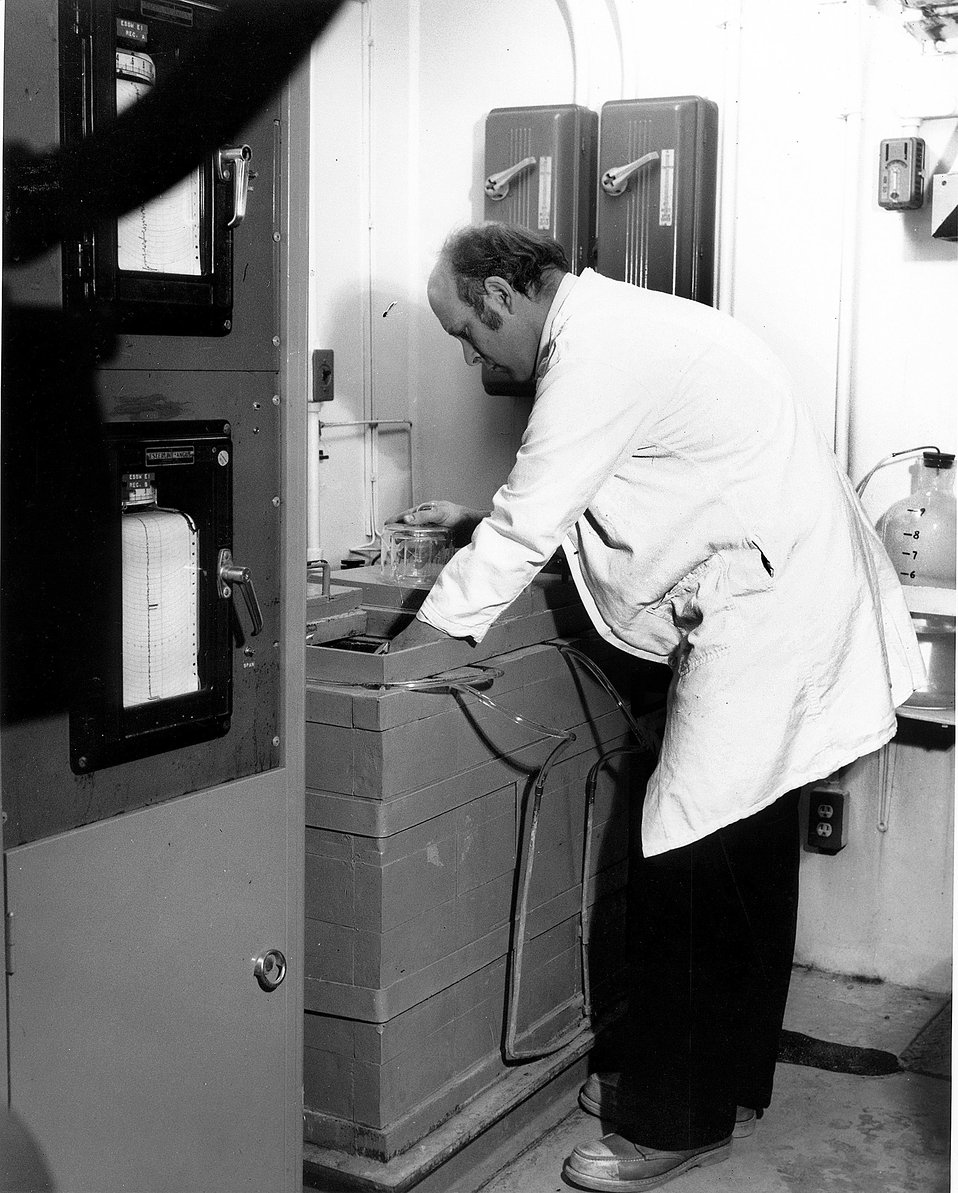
Worker demonstrates the movable sensing head of an alpha portable alarming hand and foot radiation counter.